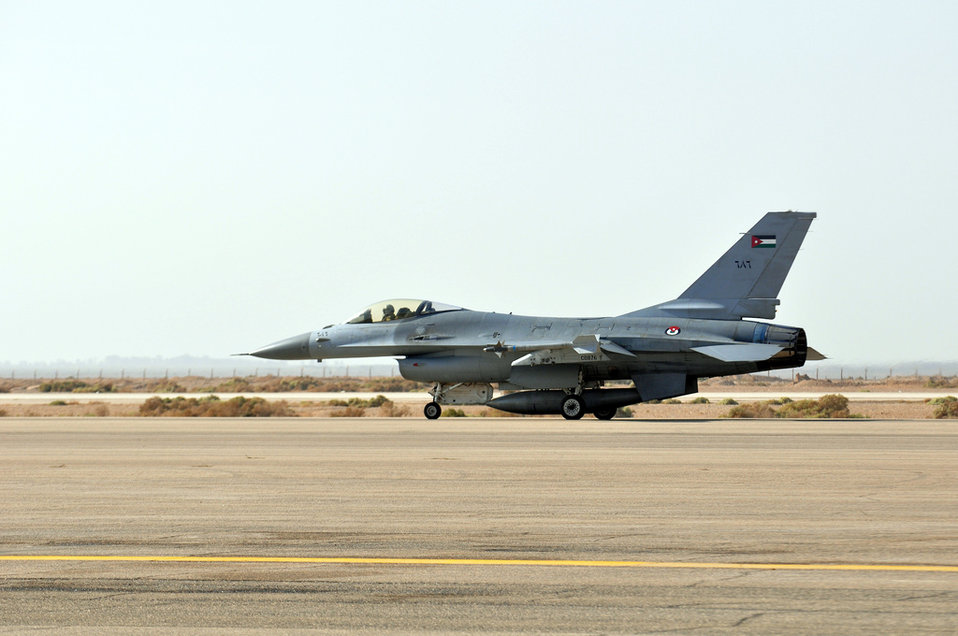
Falcon Air Meet

An F-16 Flying Falcon lands Oct. 28, 2009, during the Falcon Air Meet at Mwaffaq Salti Air Base, Azraq, Jordan. The Falcon Air Meet is an annual exercise between the U.S. Air Force, the Royal Jordanian Air Force and other regional countries whose air forces fly the F-16 Fighting Falcon. The Colorado and South Carolina Air National Guards are among this year's participants.